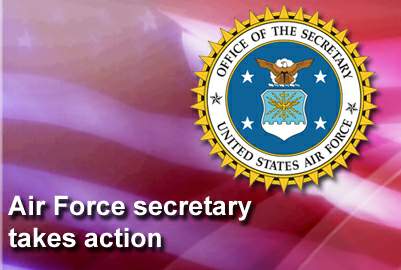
Air Force secretary takes action on DOD IG report

Secretary of the Air Force Michael B. Donley took administrative action against retired Gen. T. Michael Moseley, the former Air Force chief of staff, for his role in the Thunderbird Airshow Production Services contract. The decision follows completion of a Department of Defense Inspector General investigation requested by the Senate Armed Services Committee in April 2008.